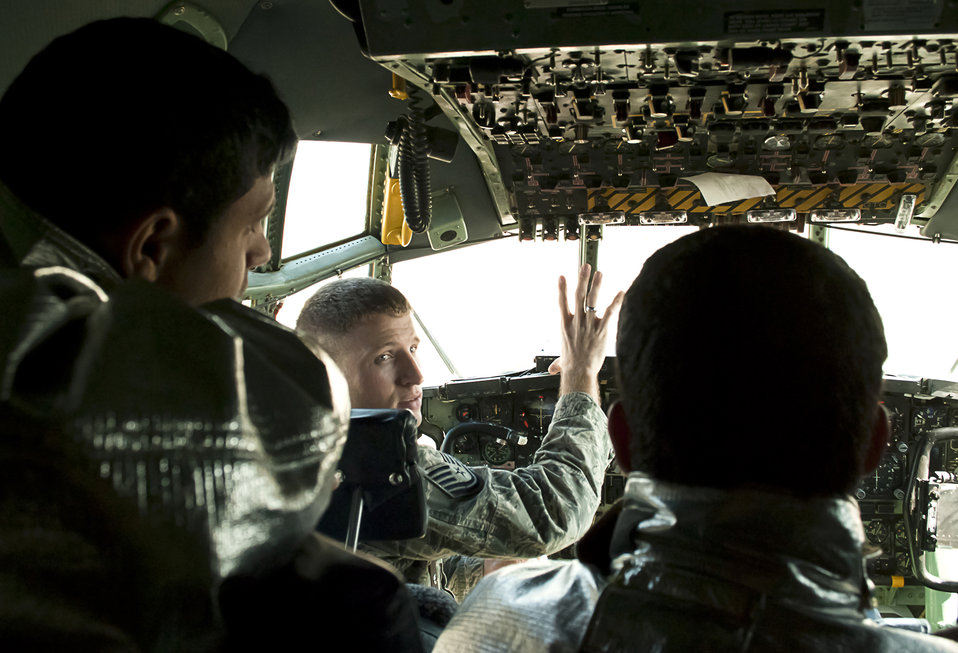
Advisers fight fire with knowledge

Tech. Sgt. Todd Barnett explains emergency shutdown procedure on a C-130 Hercules Jan. 24, 2011, at New Al-Muthana Air Base, Iraq. The familiarization class was intended to broaden the depth of knowledge and experience for Iraqi air force firefighters. Sergeant Barnett is an Iraq Training and Advisory Mission-Air adviser.